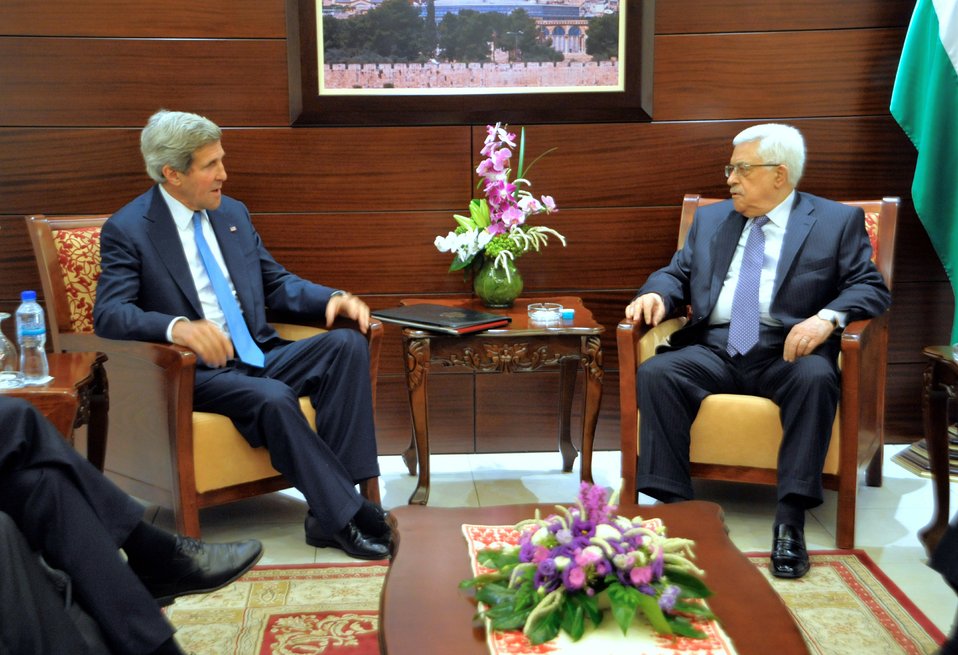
Secretary Kerry Meets With Palestinian Authority President Abbas

U.S. Secretary of State John Kerry sits with Palestinian Authority President Mahmoud Abbas before a meeting in Ramallah, West Bank, on July 19, 2013.